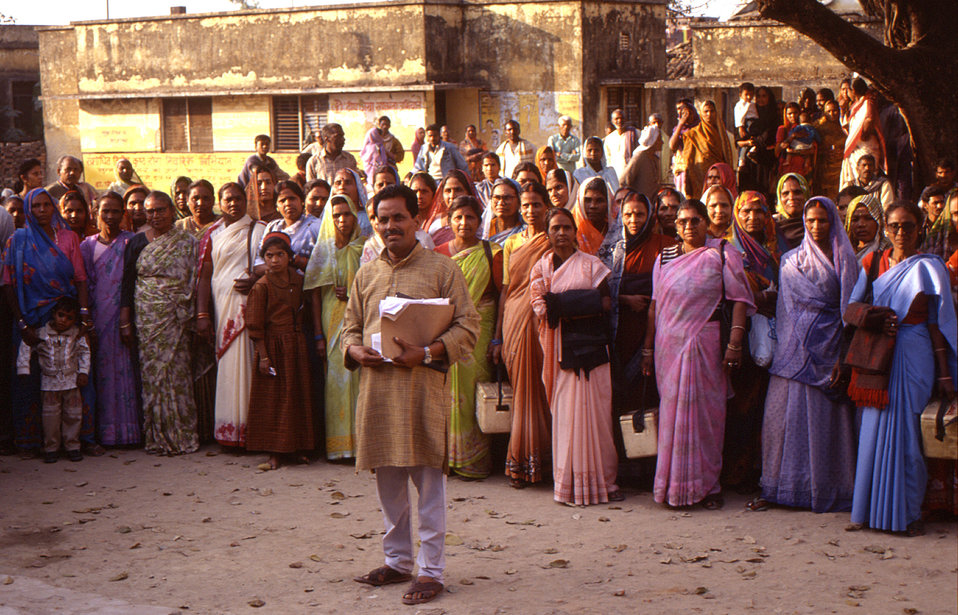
This 2000 photograph depicted a gathering of both health care practitioners, as well as the general public, who'd come together at a rally in the Indian state of Uttar Pradesh, which was held to promote the country's polio immunization efforts. The Indian health care workers involved in the campaign are to the left, standing near the tree. The image was provided by Chris Zahniser, B.S.N., R.N., M.P.H., a Stop Transmission of Polio (STOP) team member and photographer, who was assigned to the state of Uttar Pradesh in northern India, and spent three months working in the Districts of Gorakhpur and Deoria.